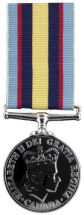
Canada Gulf and Kuwait Medal Fran√ßais†: M√©daille du Golfe et du Kowe√Øt canadienne